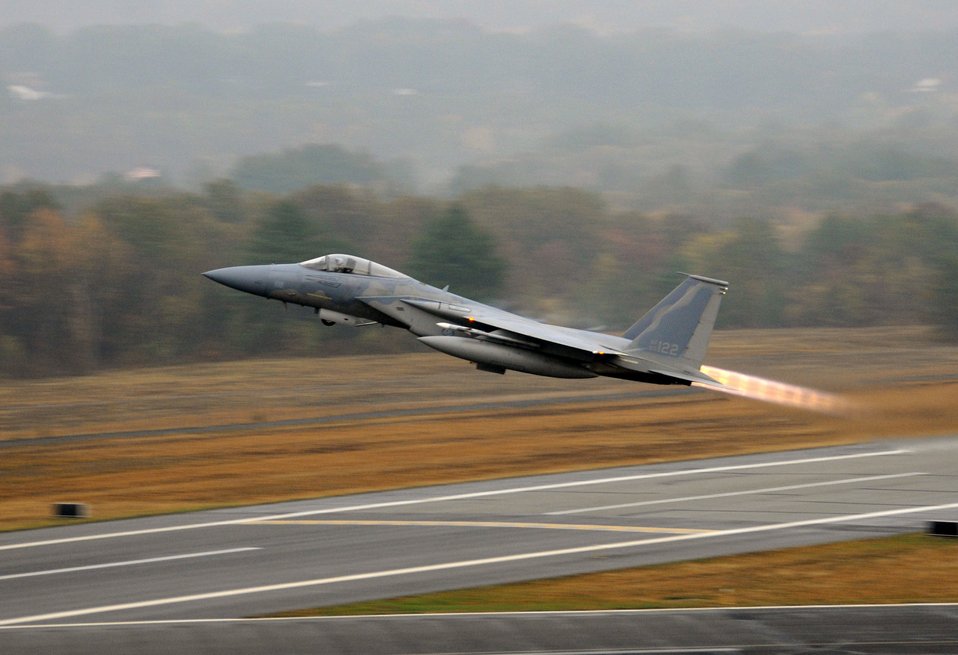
Protecting the homeland

An F-15 Eagle takes off from Barnes Air National Guard Base, Mass., while participating in a training mission Oct. 21, 2010. The Massachusetts Air National Guard's 104th Fighter Wing provides air sovereignty alert support, protecting the northeastern United States.